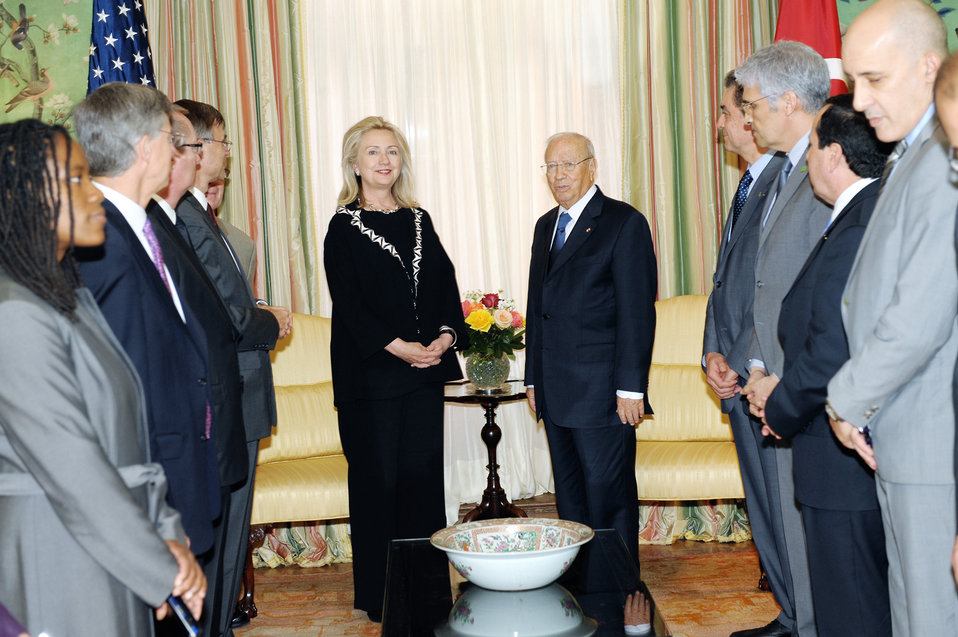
Secretary Clinton Meets With Tunisian Prime Minister Beji Caid Essebsi

U.S. Secretary of State Hillary Rodham Clinton meets with Tunisian Prime Minister Beji Caid Essebsi at the Blair House in Washington, D.C., on October 6, 2011.